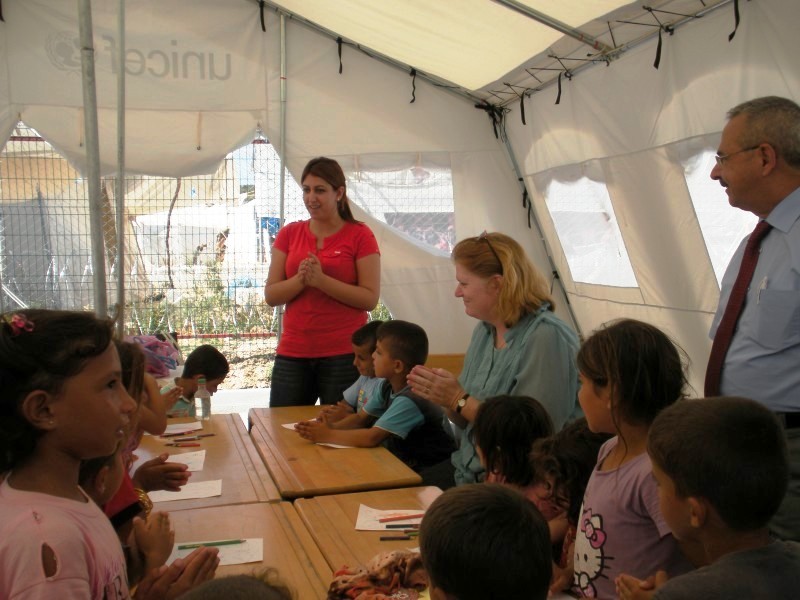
Assistant Secretary Richard Meets With Syrian Refugees

Assistant Secretary for the Bureau of Population, Refugees, and Migration Anne C. Richard meets with Syrian refugees in at a camp in Hatay Province, Turkey, September 2012.